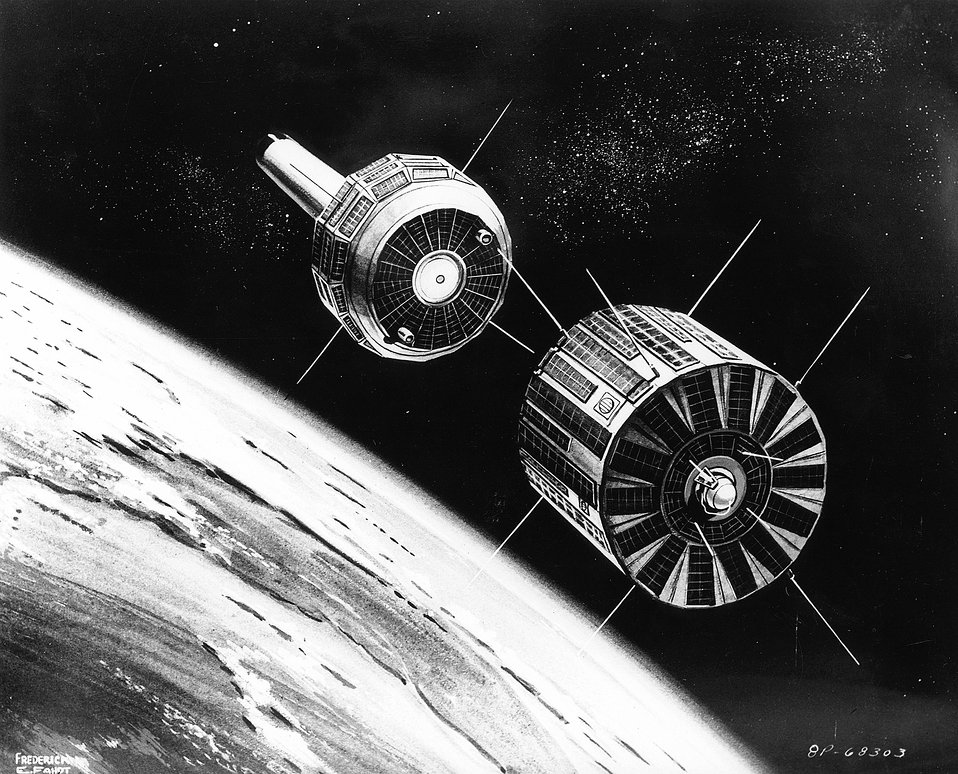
Second successful use of atomic energy in space is depicted in this drawing of the transit 4B and TRAAC satellite in orbit.